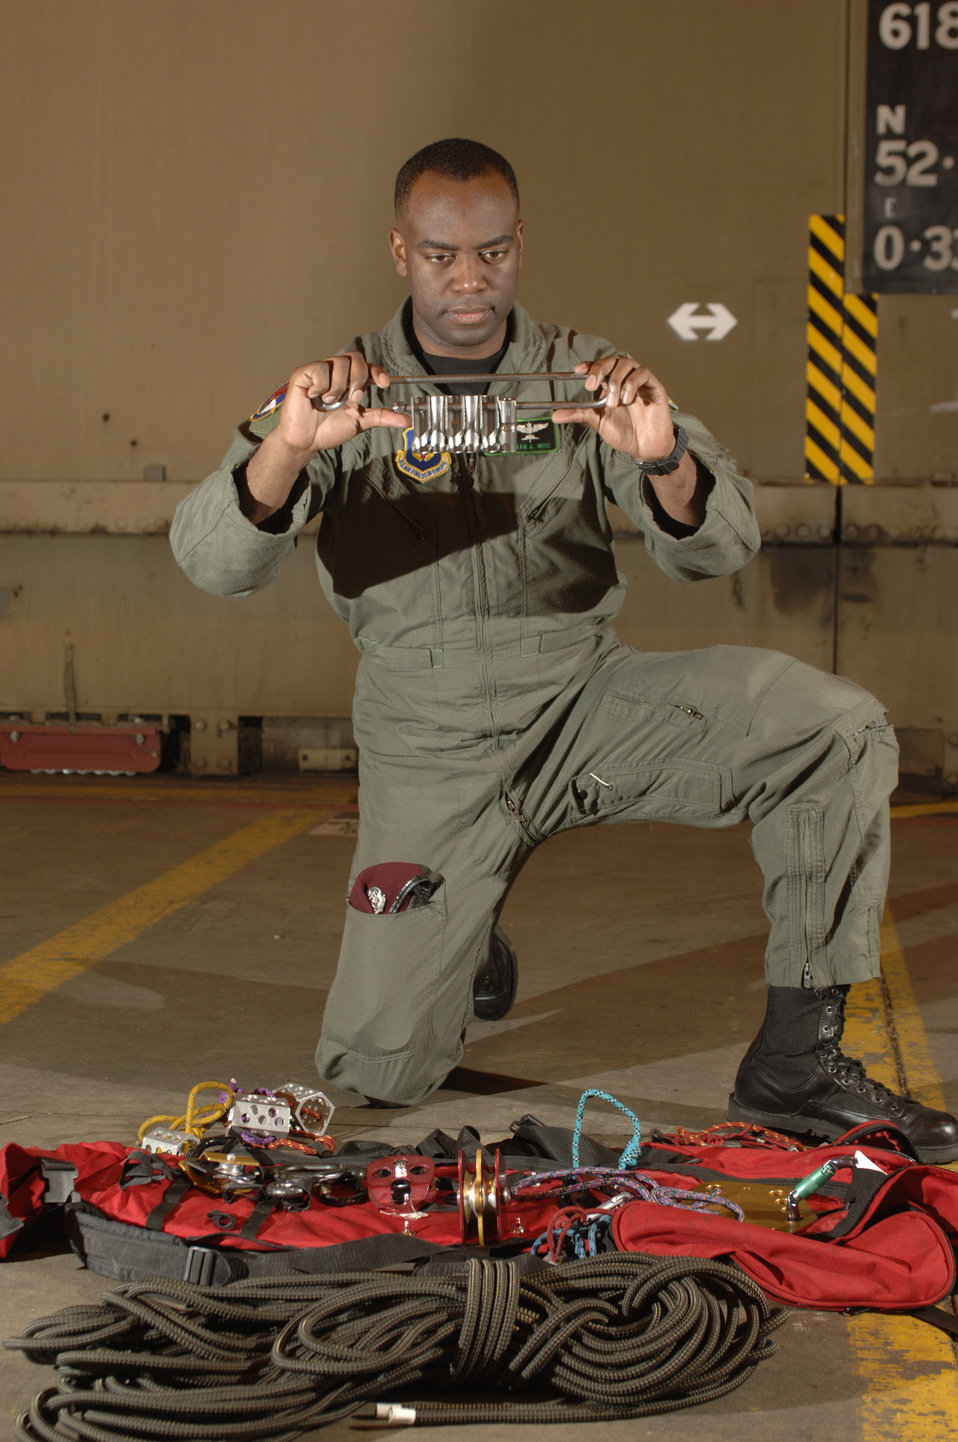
Rescue unit faces moving challenges

Staff Sgt. Kipran Wise inspects mountaineering gear at Royal Air Force Lakenheath, England, on Aug. 2. The sergeant is a pararescueman with the 56th Rescue Squadron. The unit moved to this fighter base from Keflavik Air Base, Iceland, in May.